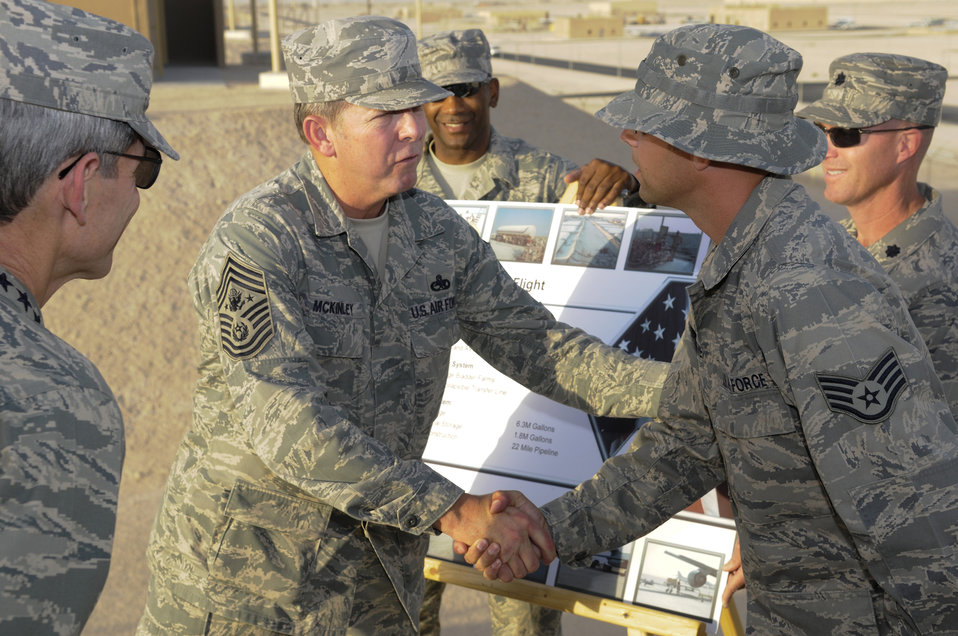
CSAF visits Southwest Asia

Chief Master Sergeant of the Air Force Rodney McKinley coins Staff Sgt. Matthew Cramer for his work as a bulk fuels storage attendant with the 379th Expeditionary Logistics Readiness Squadron. Sergeant Cramer briefed the Chief Master Sergeant of the Air Force and Air Force Chief of Staff Gen. Norton Schwartz Oct. 20, during a visit to their location. The visit marked the CSAF's first trip to the U.S. Air Forces Central area of responsibility since his appointment as the Air Force chief of staff.